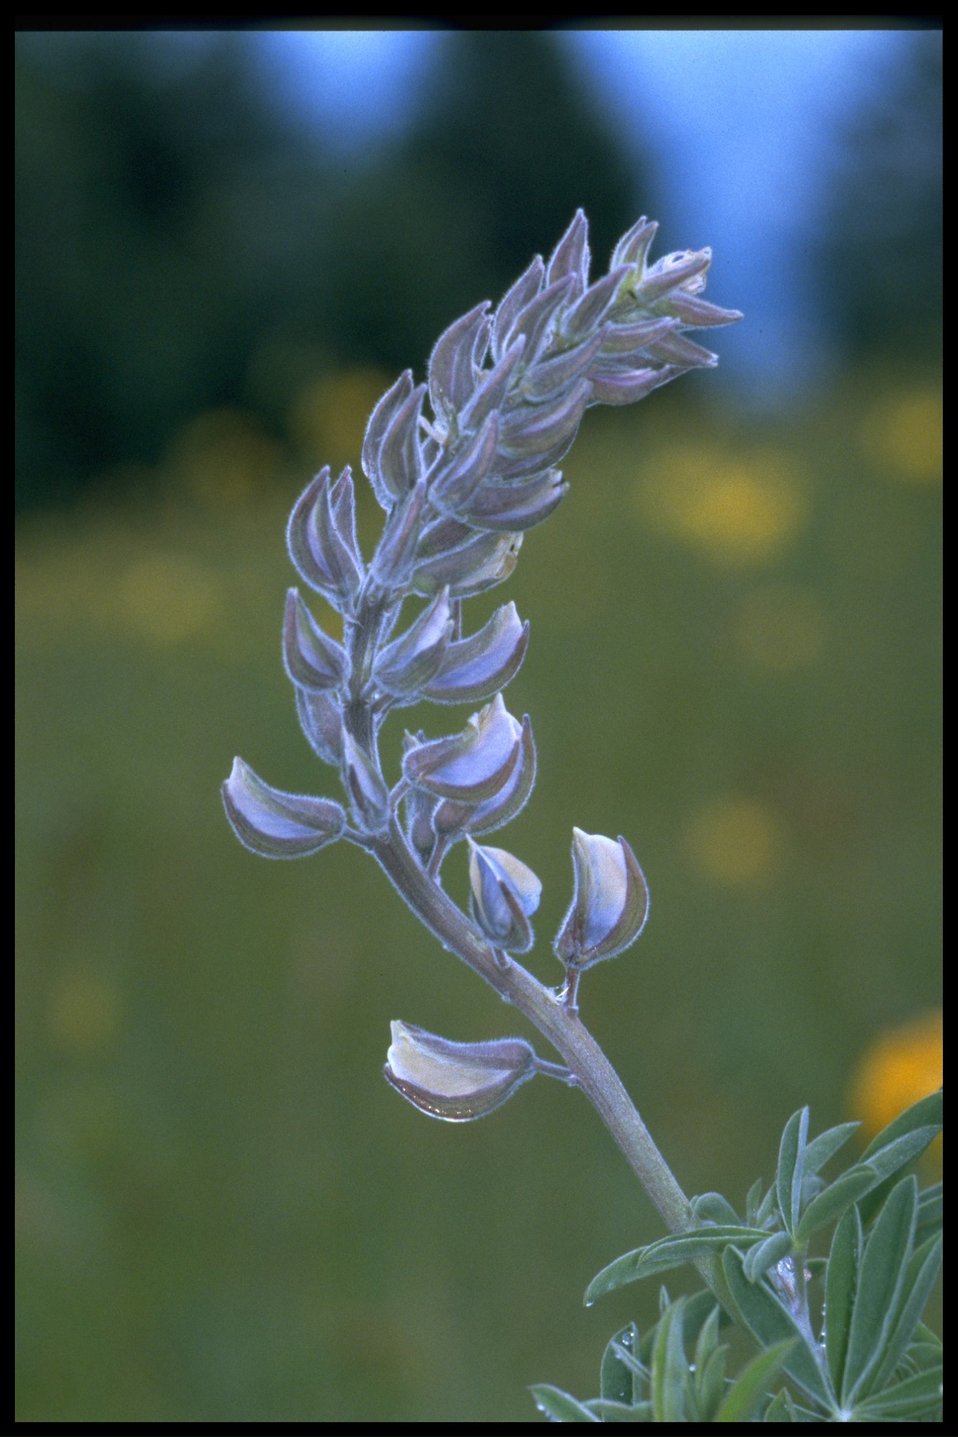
Closeup shot of lupine (genus Lupinus).